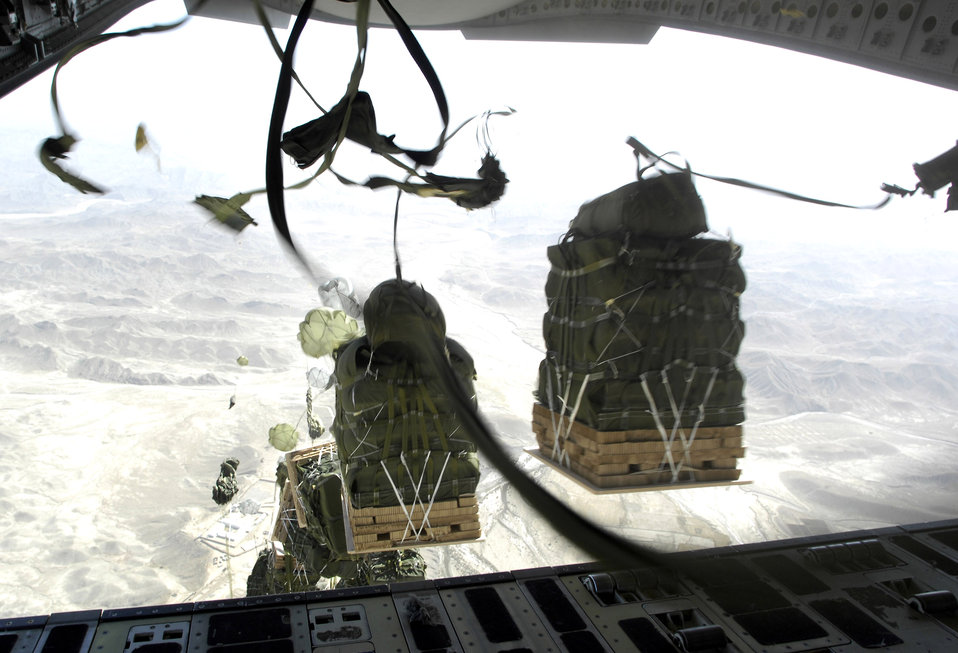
Airpower summary for Oct. 11, 2007

On the first pass, 16 resupply bundles are dropped from the lead C-17 Globemaster III onto a drop zone in Afghanistan Oct. 11. A total of 62 cargo bundles were dropped from two C-17s. This was the first time a combat cargo drop of this magnitude has taken place from two C-17s in formation over one drop zone. The planes and crews are from the 817th Expeditionary Airlift Squadron at Manas, Kyrgyzstan.